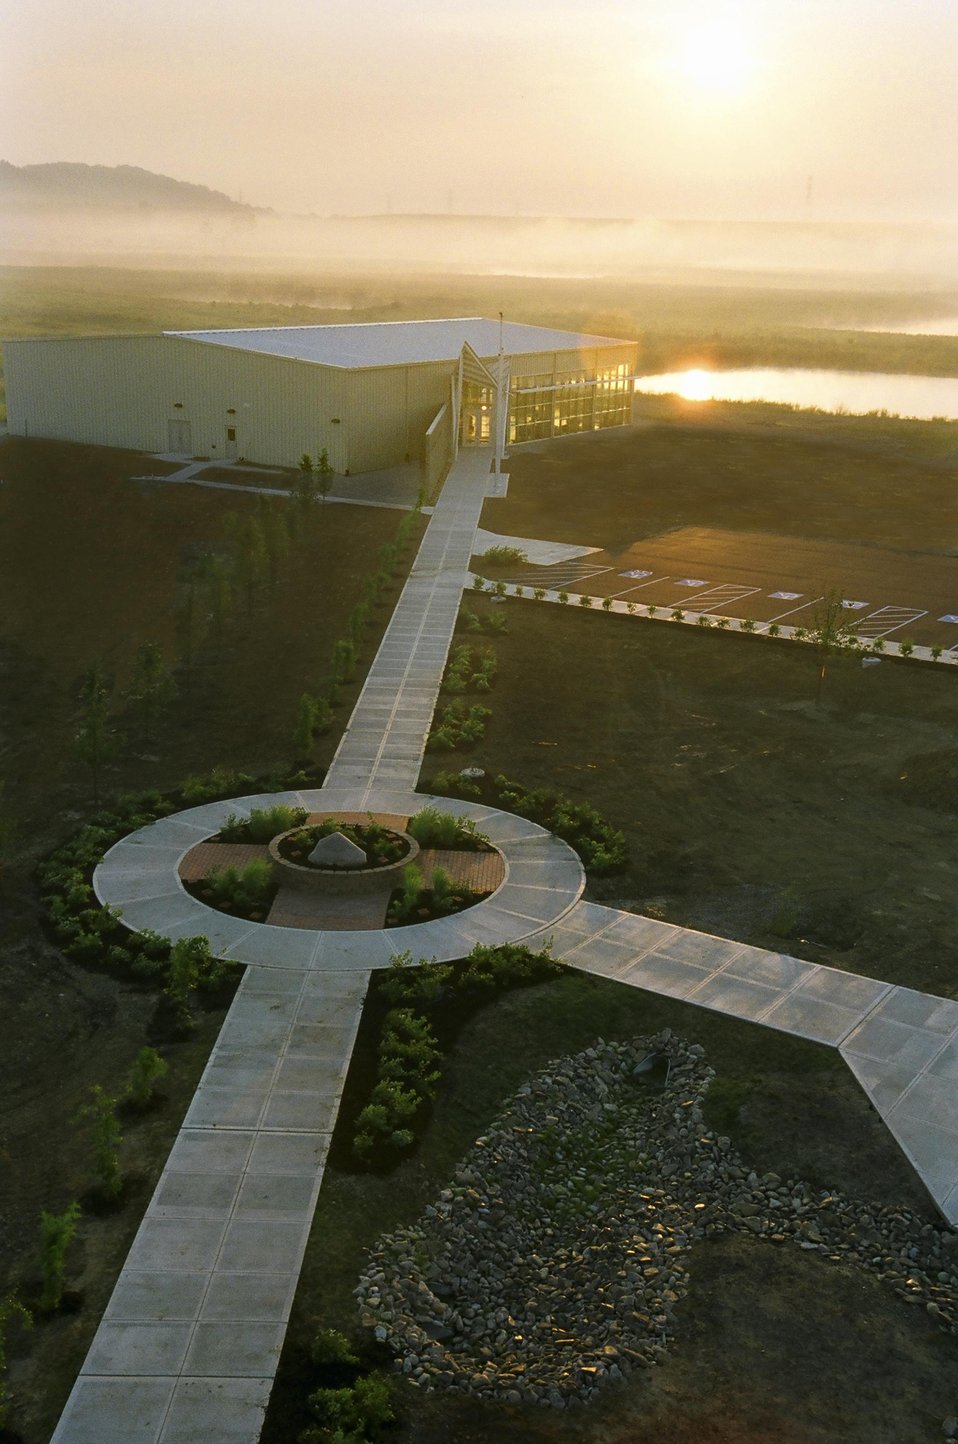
Fernald Preserve Visitors Center.
The Fernald Preserve Visitor Center is a 10,000 square foot green building that celebrates the rich and varied history of the Fernald Site. Information on the site's natural, Native American, settlement and farming, uranium production, and environmental cleanup eras, as well as the recent ecological restoration and legacy management mission, is presented through a series of exhibits. The U.S. Green Building Council awarded the center platinum level certification through its Leadership in Energy and Environmental Design (LEED) program.